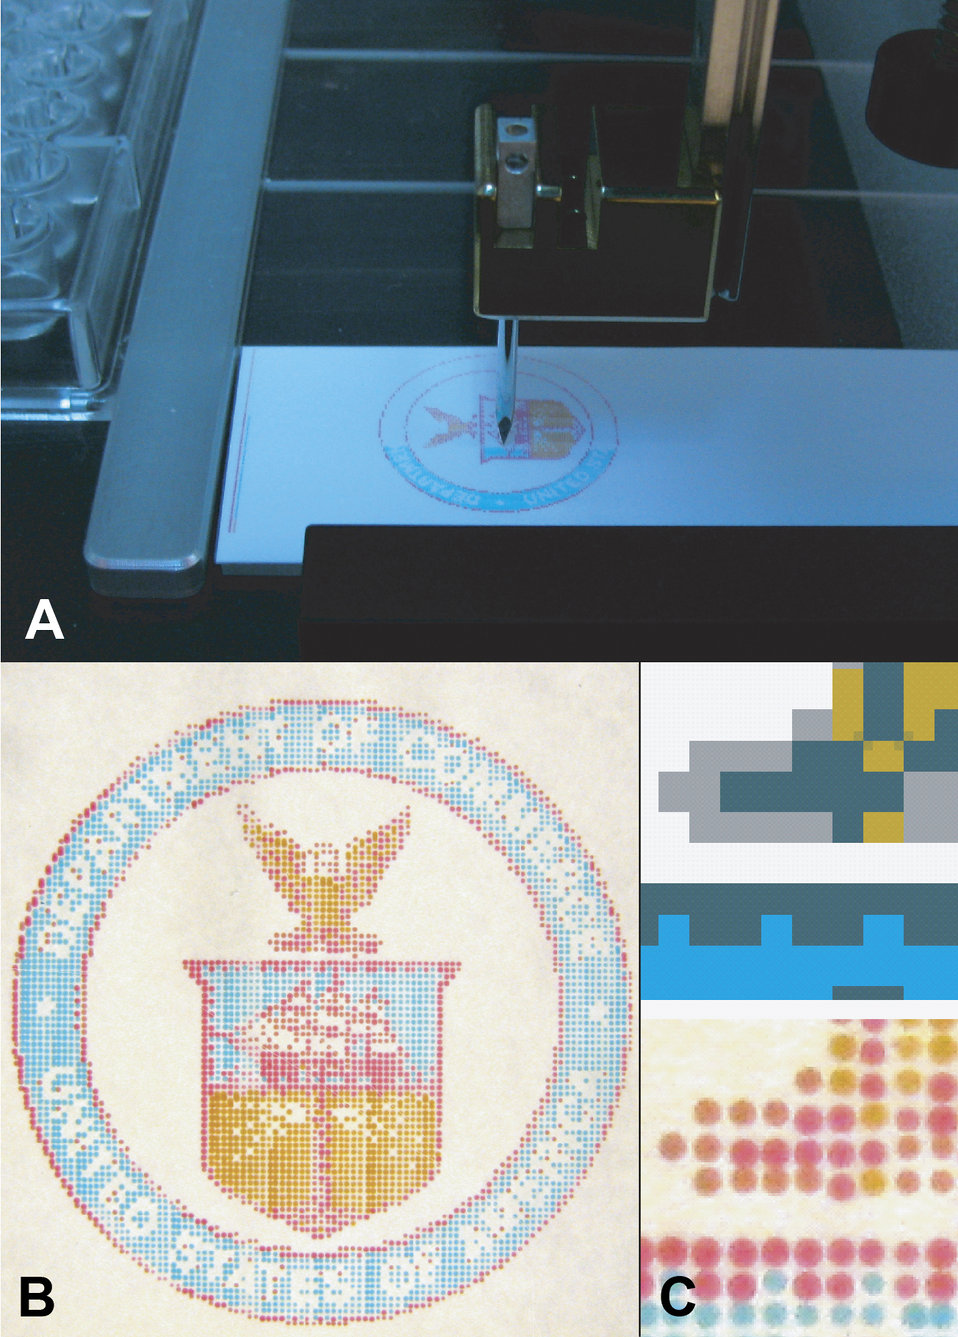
NIST Effort Could Improve High-Tech Medical Scanners

Microarrayer machines (A) now can mix colors and deposit them on microscope slides, which can be used to calibrate hyperspectral imagers (HSI) for use in medical applications. The finished slides can be custom-colored (B) to calibrate HSIs to find specific types of tumors or disease tissue. Close up, they resemble dot-matrix printwork (C).